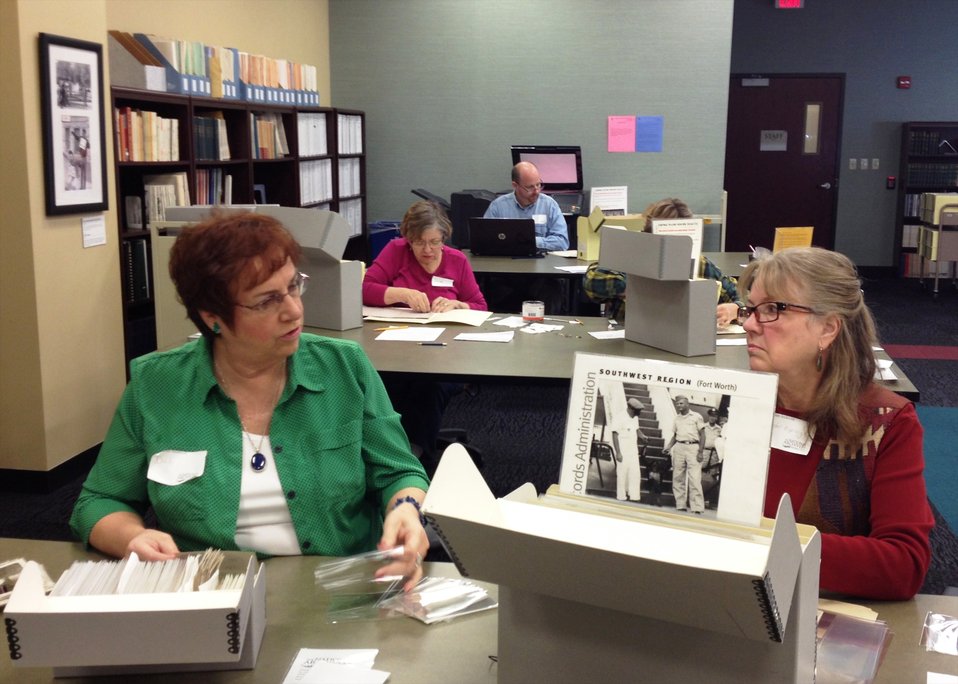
Citizen Archivist event; Location: National Archives at Kansas City - RMKC Research Room, Kansas City, MO